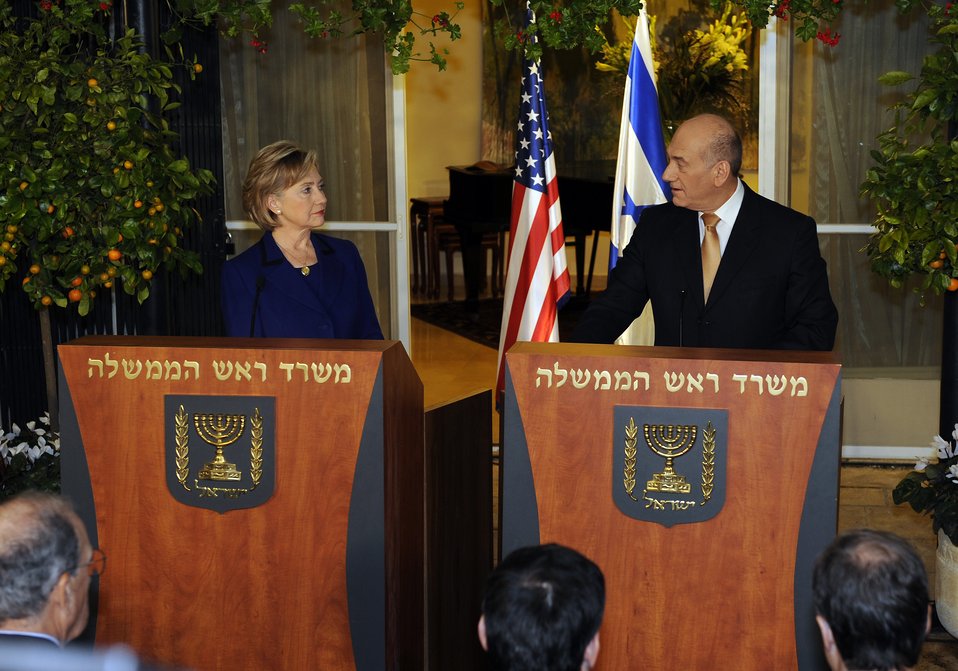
Secretary Clinton Visits Israeli Prime Minister Residence

U.S. Secretary of State Hillary Rodham Clinton during a statement at Prime Minister Ehud Olmert's Residence, Jerusalem, March 3, 2009.